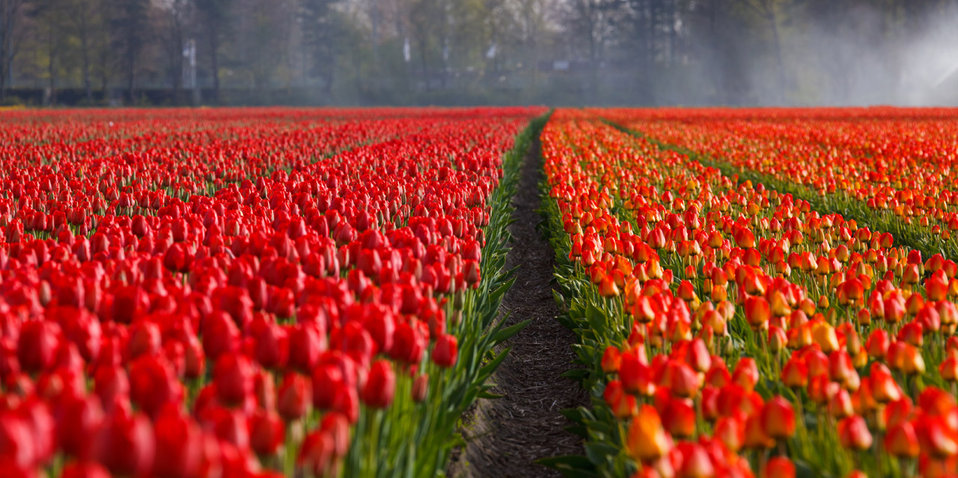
Tulip field

Tulip fields in holland.